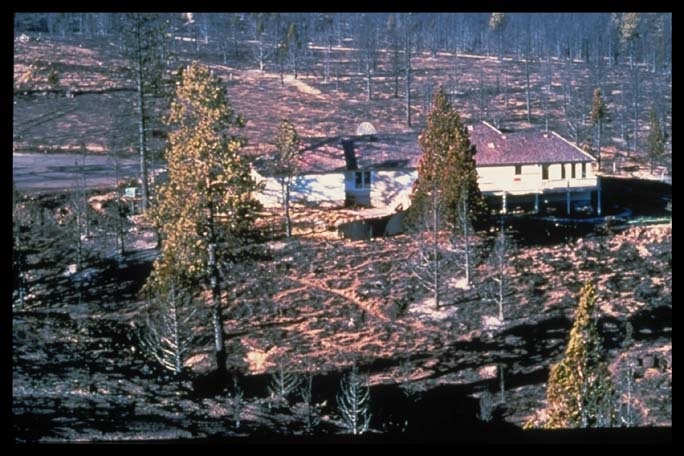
Wildland/Urban interface